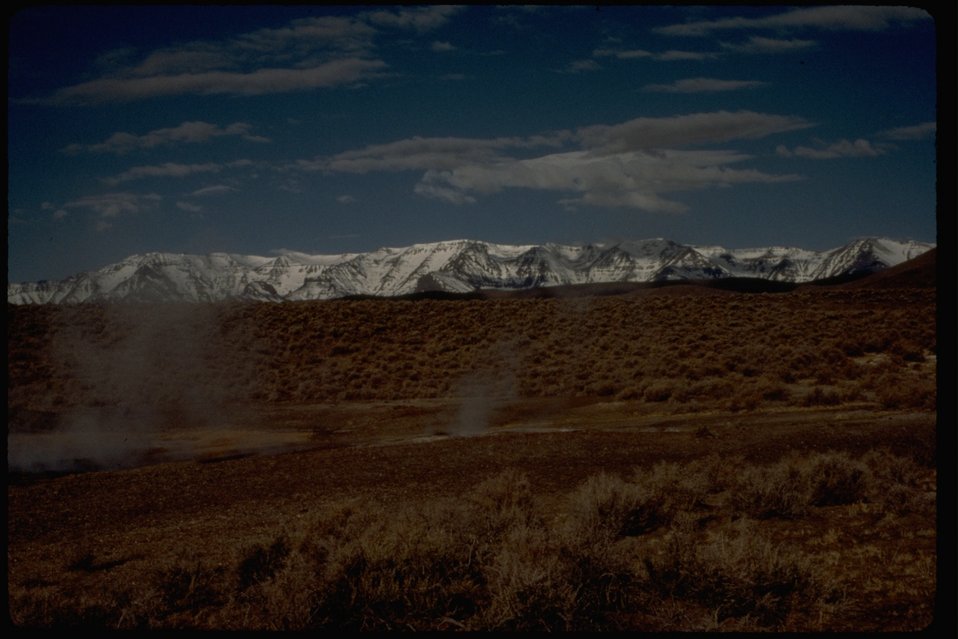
Mickey Springs in the foreground and the Steens in the background. OR 2-73A/2-85F